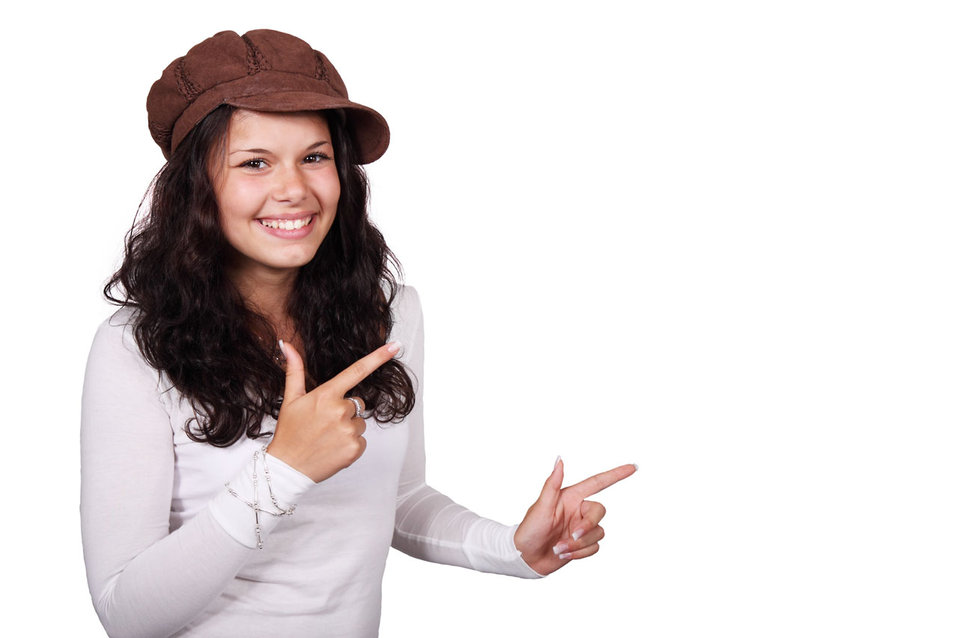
Young woman pointing isolated on white background.